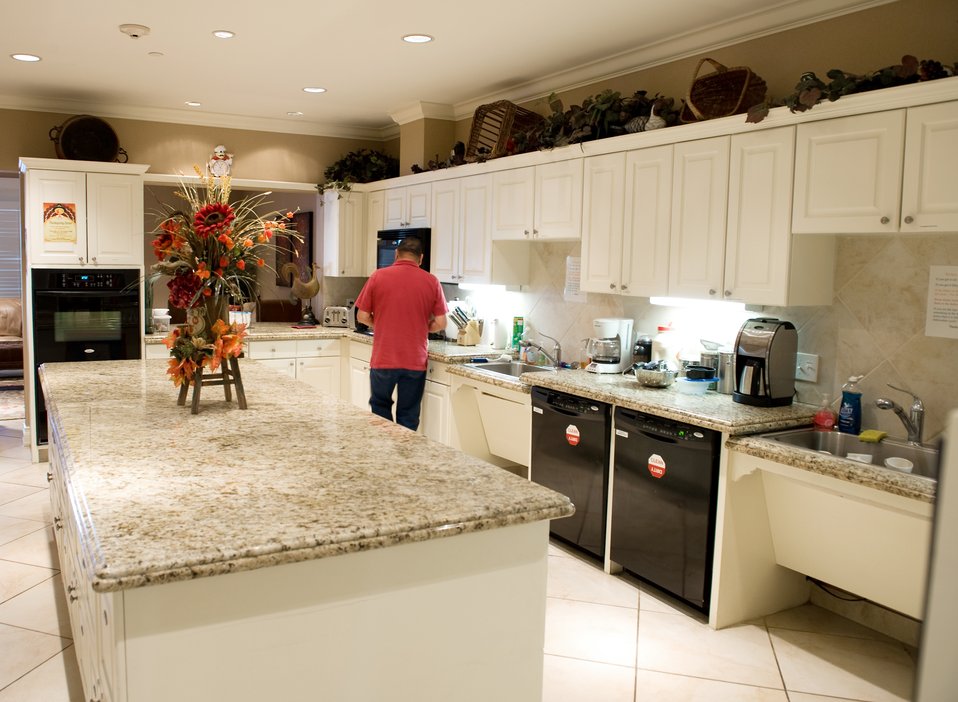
AF Spouse Raises Half a Million for Fisher House

After preparing some food, a patient leaves the kitchen of one of the two newer Fisher Houses in San Antonio, on Nov. 25. Each of these 16,800 square foot Fisher Houses can accommodate up to 42 families visiting their injured love ones. Private donations were used to fund their construction, operation and maintenance.